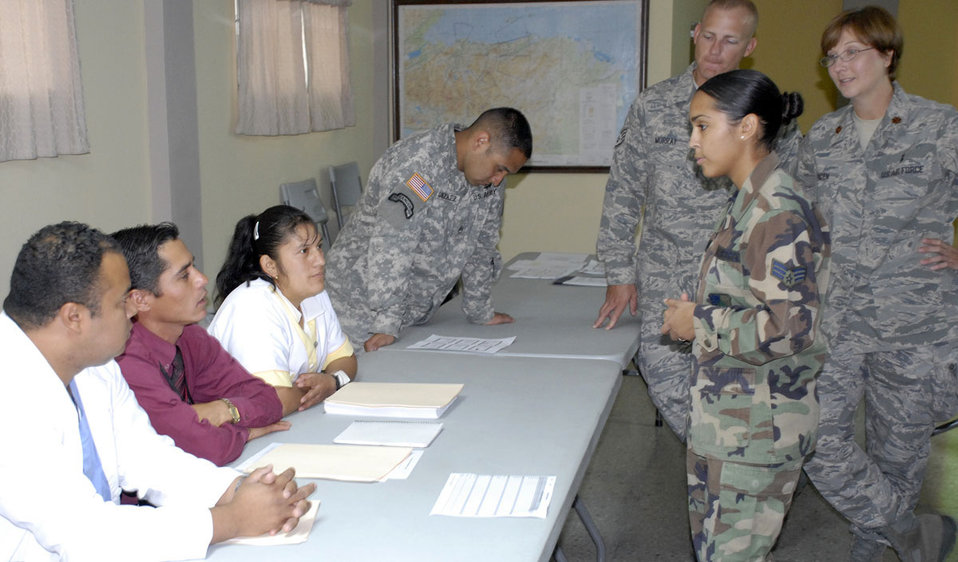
Honduras, American medics gather to share skills

Senior Airman Yaritza Liriana, Staff Sgt. Tom Murray, Maj. Regina Paden and Army Staff Sgt. Erik Gonzalez talk with Honduran medical staff members during an information exchange April 6 at Hospital Militar Luis Alonso Discua in Honduras. The exchange was attended by more than 35 medical professionals from several public and private hospitals in the Tegucigalpa region. Airman Liriana, Sergeant Murray, Major Paden and Sergeant Gonzalez are Joint Task Force-Bravo medical element members.